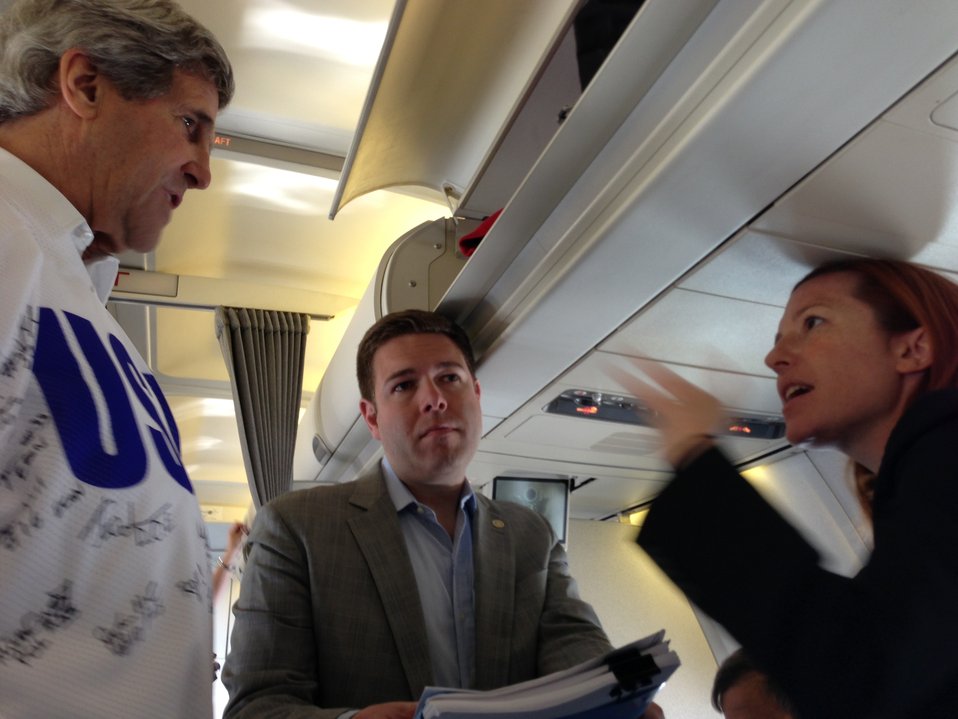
Secretary Kerry Speaks With Colleagues Before Departing Moscow

U.S. Secretary of State John Kerry speaks with his chief of staff, David Wade, and State Department Spokesperson Jennifer Psaki before his airplane departs Moscow, Russia, on May 8, 2013.